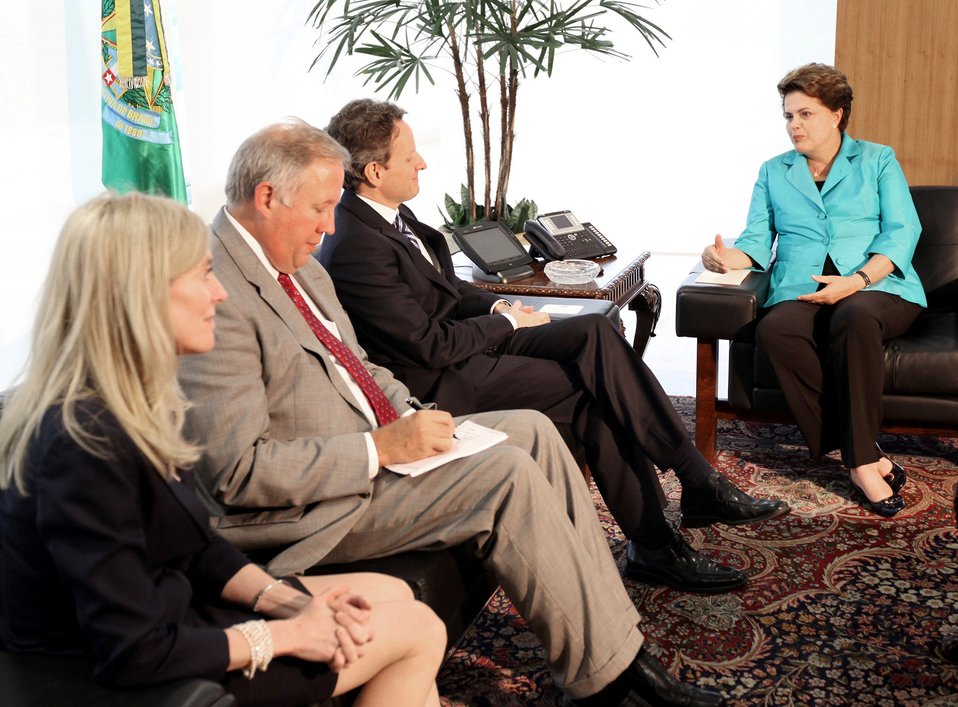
Secretary Geithner Travels to Brazil, 02/07/2011

On Monday, February 7, 2011, Secretary Geithner met with Brazilian President Dilma Rousseff in Brasilia, Brazil. He was accompanied by Under Secretary for International Affairs Lael Brainard and U.S. Ambassador to Brazil Tom Shannon.